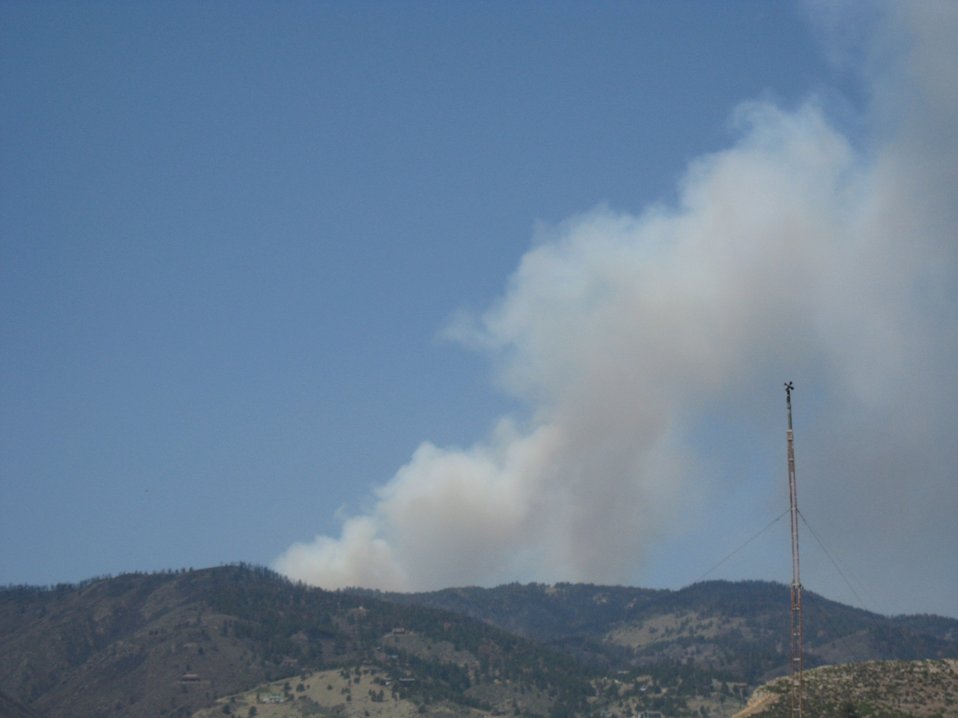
Smoke and flames rise in the air at the High Park Wildfire on the Arapaho and Roosevelt National Forests and Pawnee National Grassland on Tuesday, June 19, 2012. The High Park Wildfire located approximately 15 miles west of Fort Collins, CO has consumed over 65,738 acres of forest and grassland with approximately 189 homes destroyed. Over 1,773 personnel from the U.S. Forest Service (FS), state and local resources are fighting the wildfire and have achieved 55% containment as of June 20, 2012. The High Park Wildfire began on June 9. 2012 because of a lightening strike on private land.